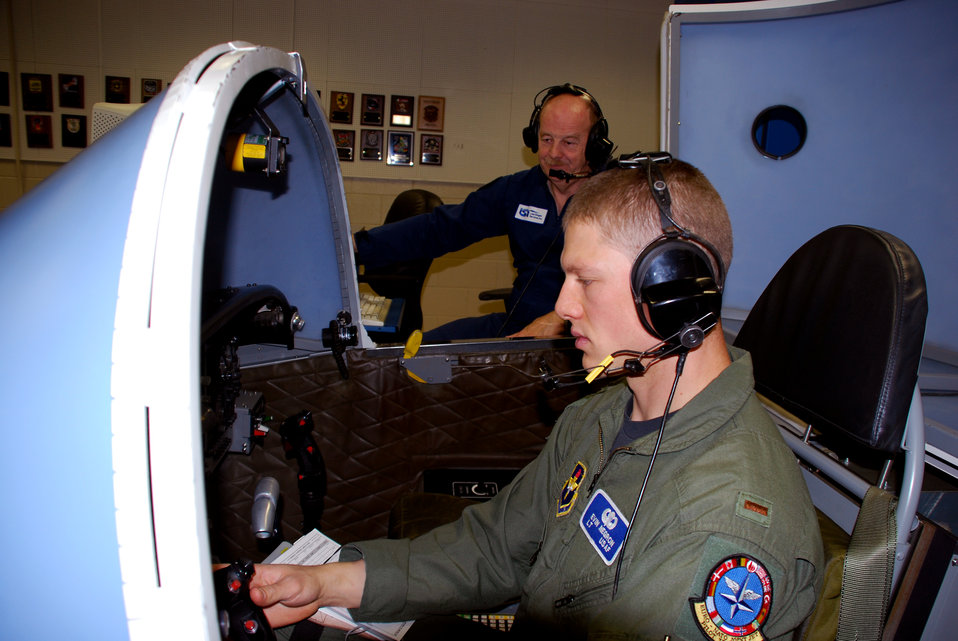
Student 'flies' last T-37 simulator mission

Second Lt. Evan Negron, a T-37 Tweet student pilot in the Euro-NATO Joint Jet Pilot Training Program at Sheppard Air Force Base, Texas,